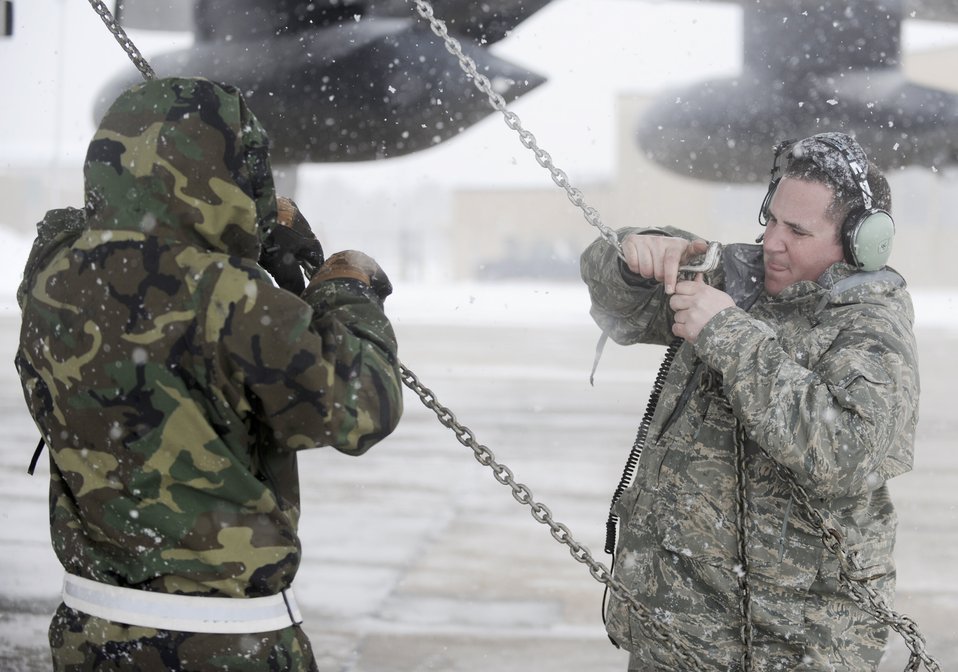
New York maintainers secure aircraft

Airmen work to secure a HC-130 Hercules during a snowstorm at the New York Air National Guard's 106th Rescue Wing at Francis S. Gabreski Airport in Westhampton Beach, N.Y., Feb. 26, 2010. The Airmen are assigned to the 106th Aircraft Maintenance Squadron.